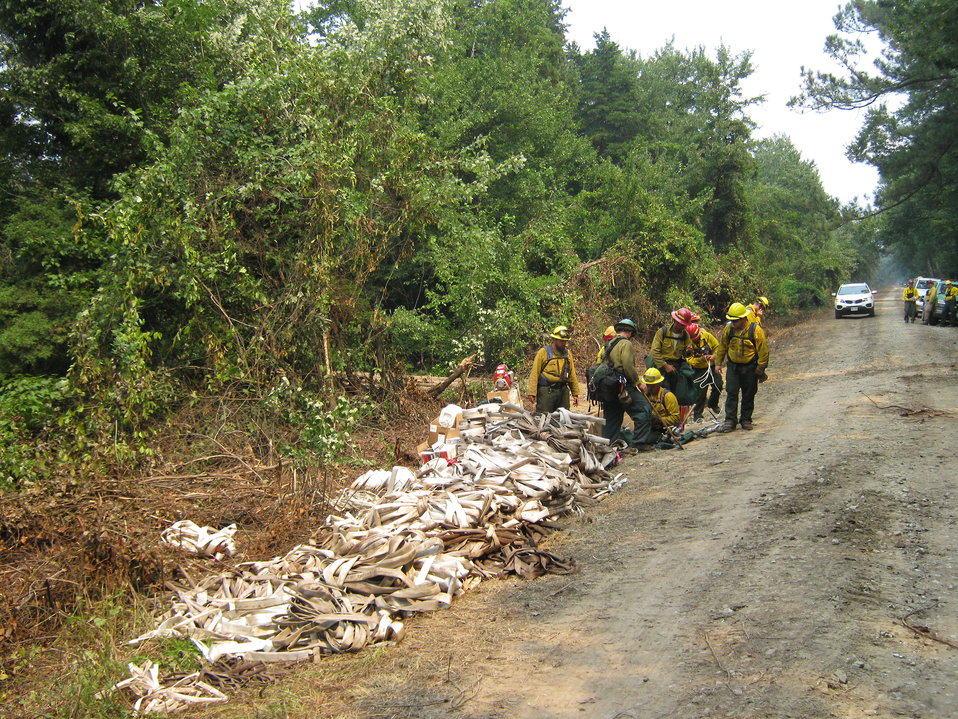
Lots of hose

Suffolk, VA, August 2011. A mound of fire hose shows the task at hand for firefighters at the Lateral West Fire on Great Dismal Swamp National Wildlife Refuge. Miiles of hose and pipe are needed to flood the fire burning deep in peat soils.